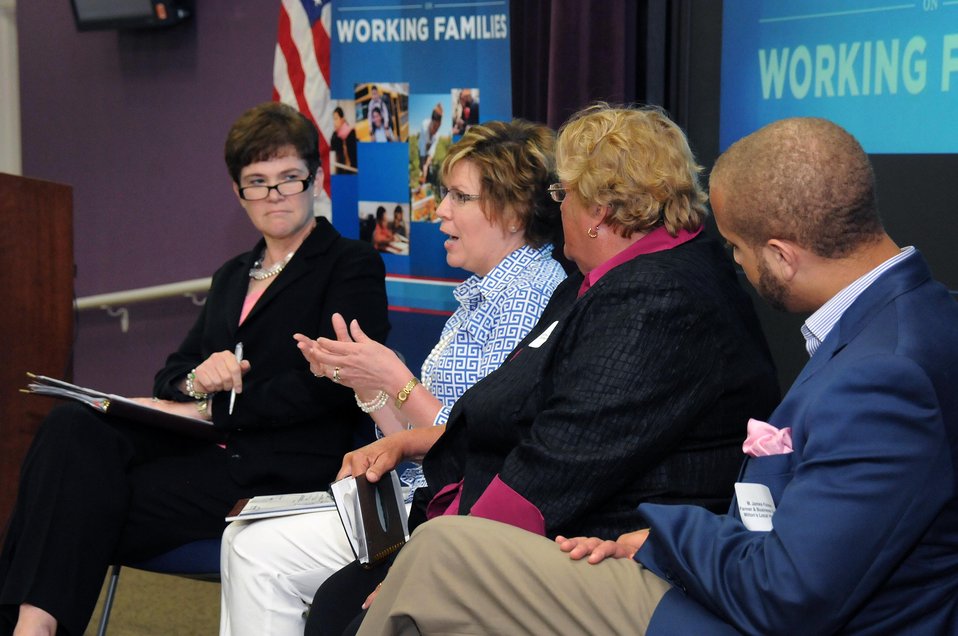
Agriculture Deputy Secretary Krysta Harden participates in a regional forum of the White House Summit on Working Families in Petersburg, VA on Wednesday, Jun. 11, 2014. The forum will brings together stakeholders with government and regional leaders to identify initiatives for working families and businesses in rural areas. This forum is part of a series of regionally hosted conversations leading up to the Jun. 23, 2014, White House Summit on Working Families.